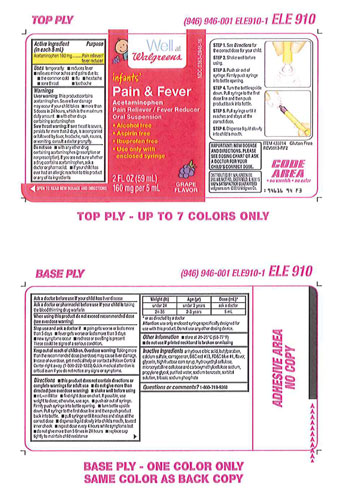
Recalled - Acetaminophen infant suspension liquid

November 1, 2013 – Product Recall – Perrigo Initiates Nationwide Voluntary Product Recall of Acetaminophen Infant Suspension Liquid, 160 Mg/5 Ml, Due to a Potential Defect with the Co-packaged Oral Syringe.